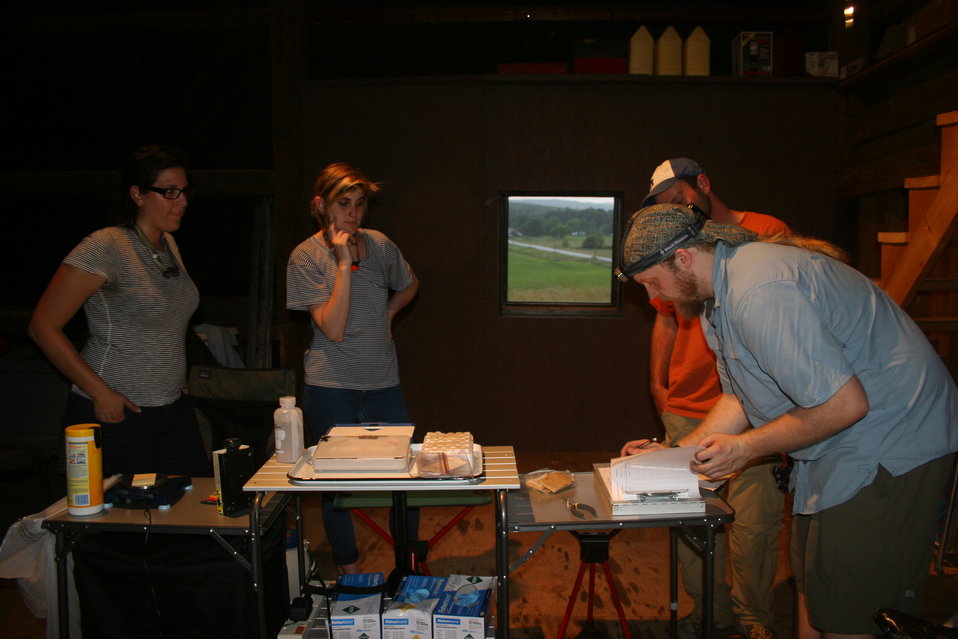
Research team preps

Research team from Boston University and USFWS prepares to work with bats.